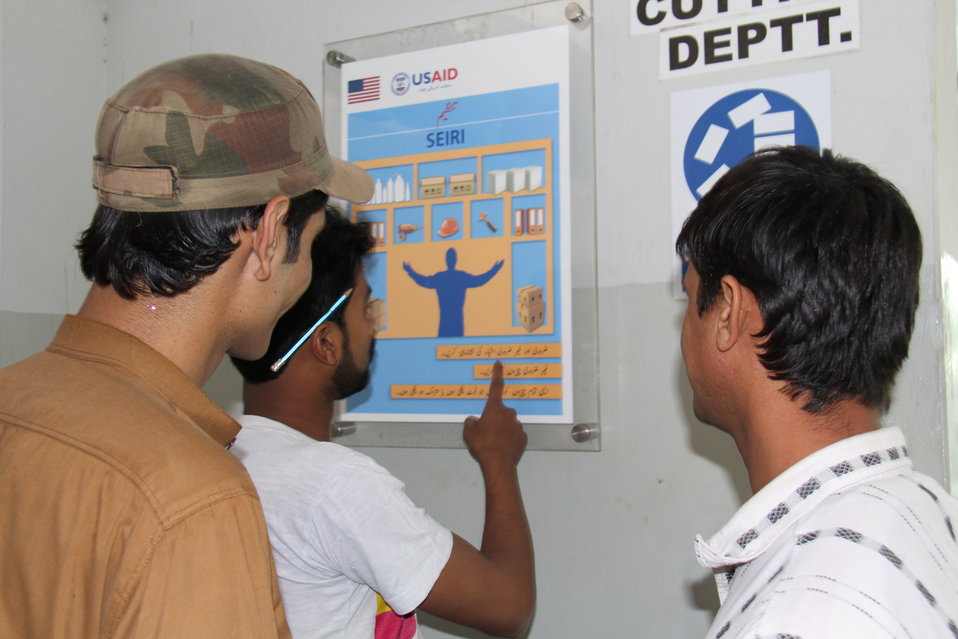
USAID's Firms Project

Project participants being trained in the Japanese garment 5-S production technique to improve productivity and safety